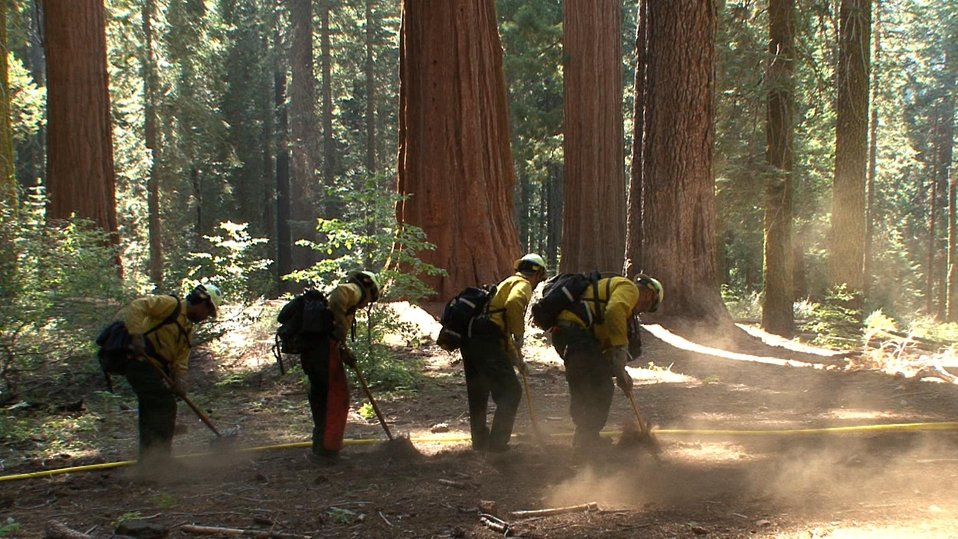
Majestic Giant Sequoias tower over National Park Service (NPS) fire crews as they establish hand line in the Merced and Tuolumne Groves to protect the trees from the Rim Fire. The Rim Fire in the Stanislaus National Forest near in California began on Aug. 17, 2013 and is under investigation. The fire has consumed approximately 149, 780 acres and is 15% contained.